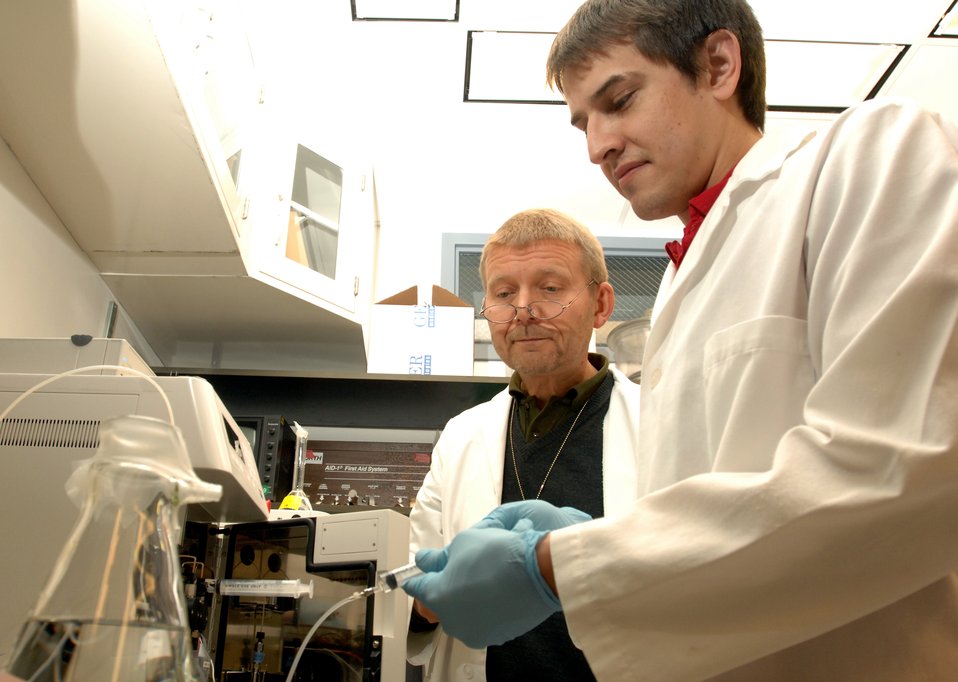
IRP Lab Researcher

Hugo Tejeda (graduate student- University of Maryland School of Medicine) and Vladimir Chefer, Ph.D. (Staff Scientist, Integrative Neuroscience Section) are shown preparing samples (from brain, blood, etc) for quantitative analysis of their contents.